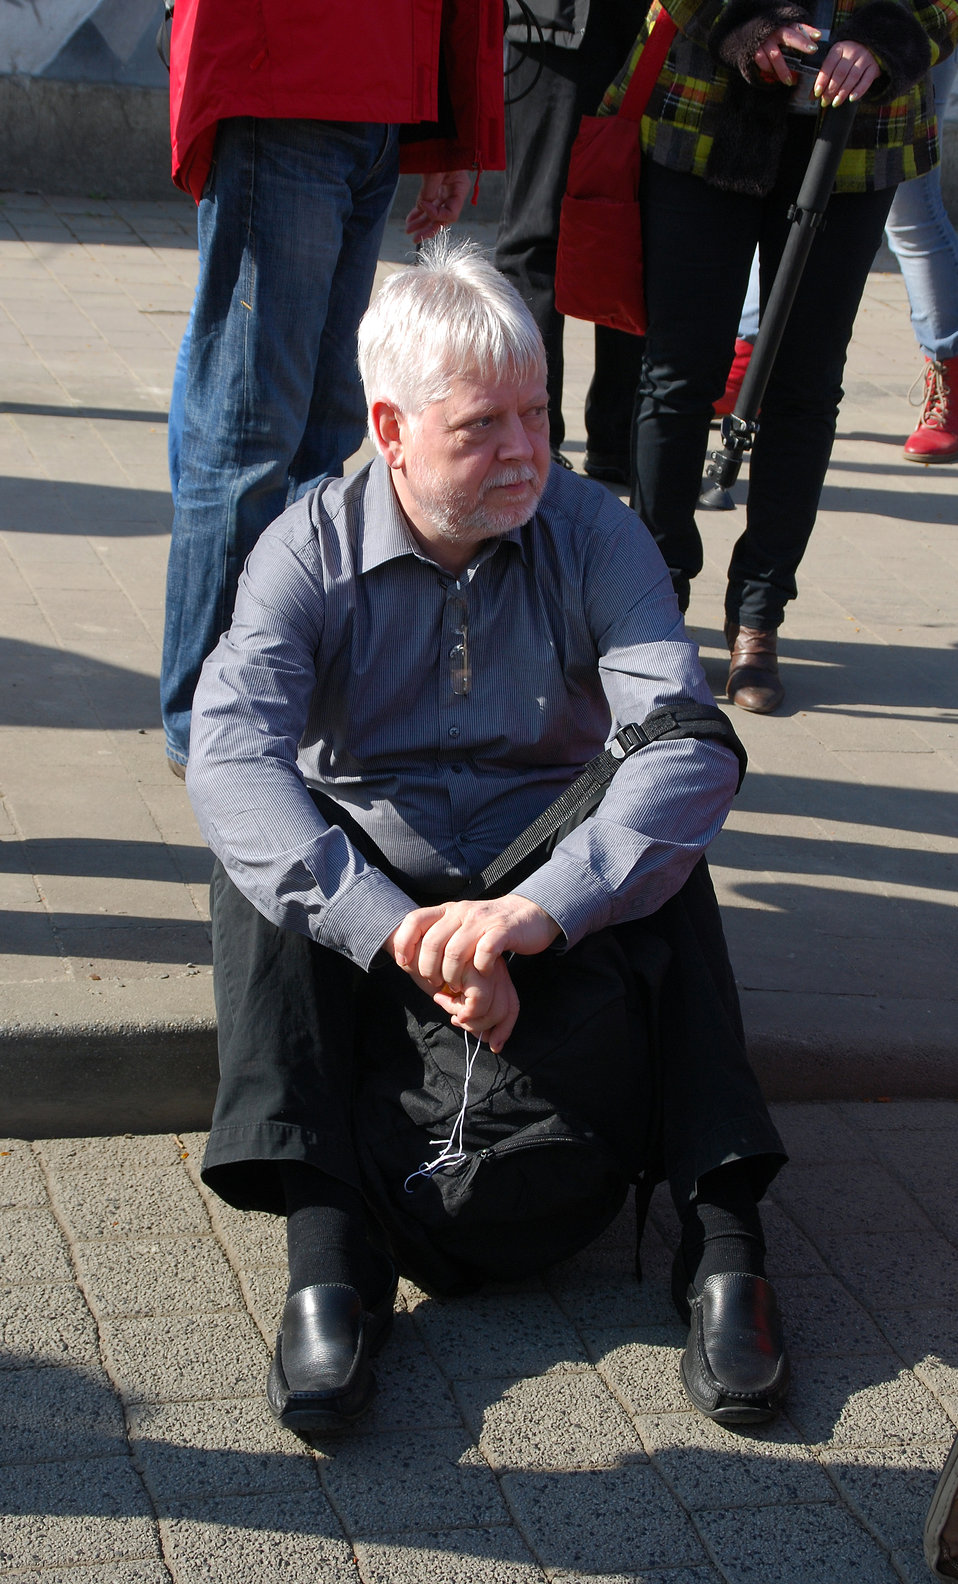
Proteste gegen den Nazi-Aufmarsch am 24.3.2012 in Frankfurt (Oder), mit Helmuth Markov, Finanzminister des Landes Brandenburg